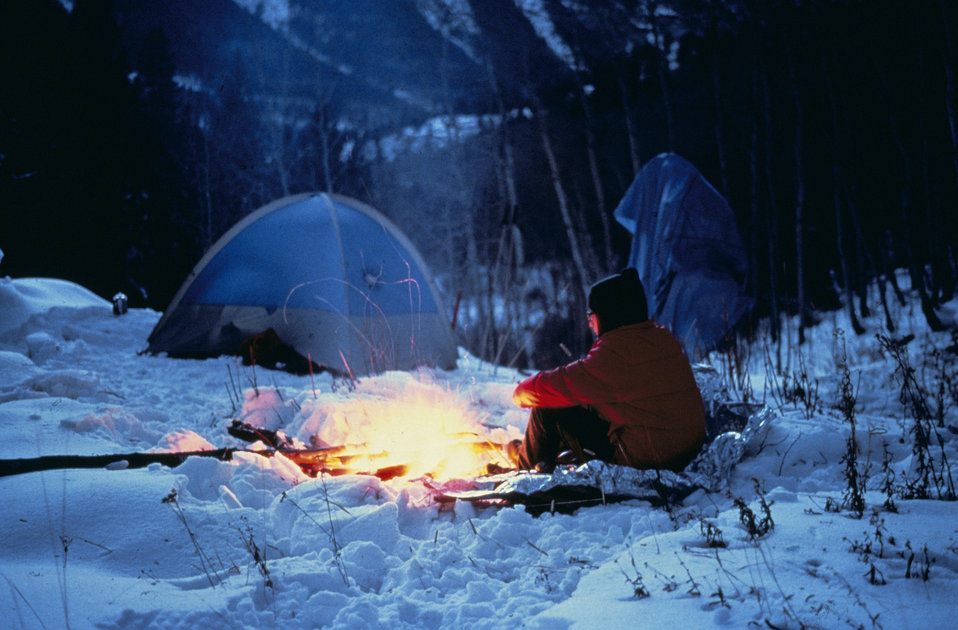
winter camp